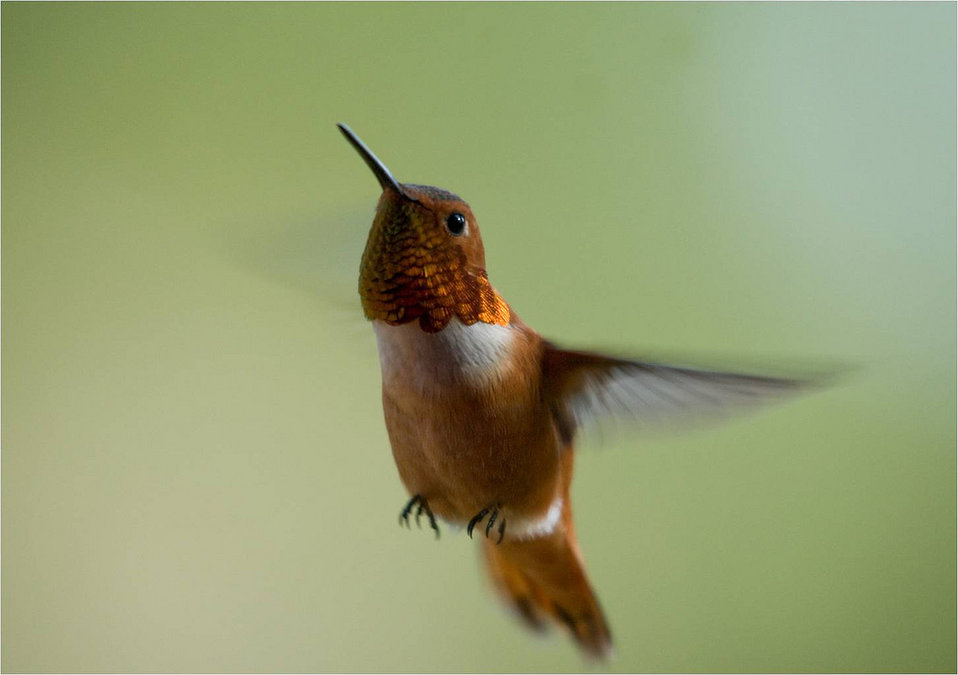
Male Rufous Hummingbird

Rufous Hummingbirds breed within Bandon Marsh, Siletz Bay, Nestucca Bay and Cape Meares National Wildlife Refuges.
Siletz Bay National Wildlife Refuge, OR
(Photo: Roy W. Lowe)

In June, 2012, the Service helped spread the word about the importance of pollinators like this hummingbird during Pollinator Week.